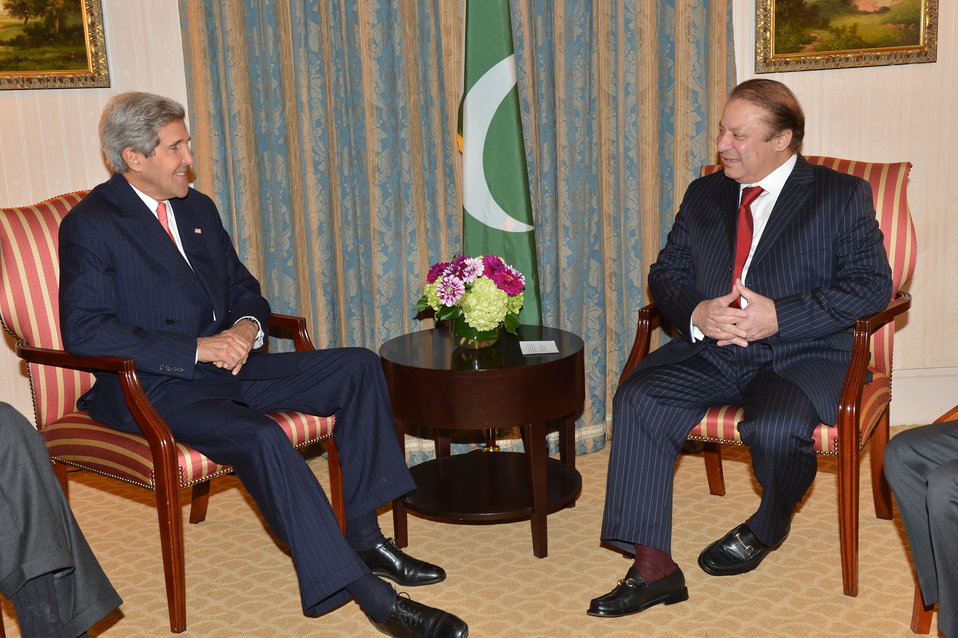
Secretary Kerry Meets With Pakistani Prime Minister Nawaz Sharif

U.S. Secretary of State John Kerry meets with Pakistani Prime Minister Nawaz Sharif in New York City on September 26, 2013. You can view a read out of Secretary Kerry's meeting with Pakistani Prime Minister Nawaz Sharif here: go.usa.gov/DfHW.